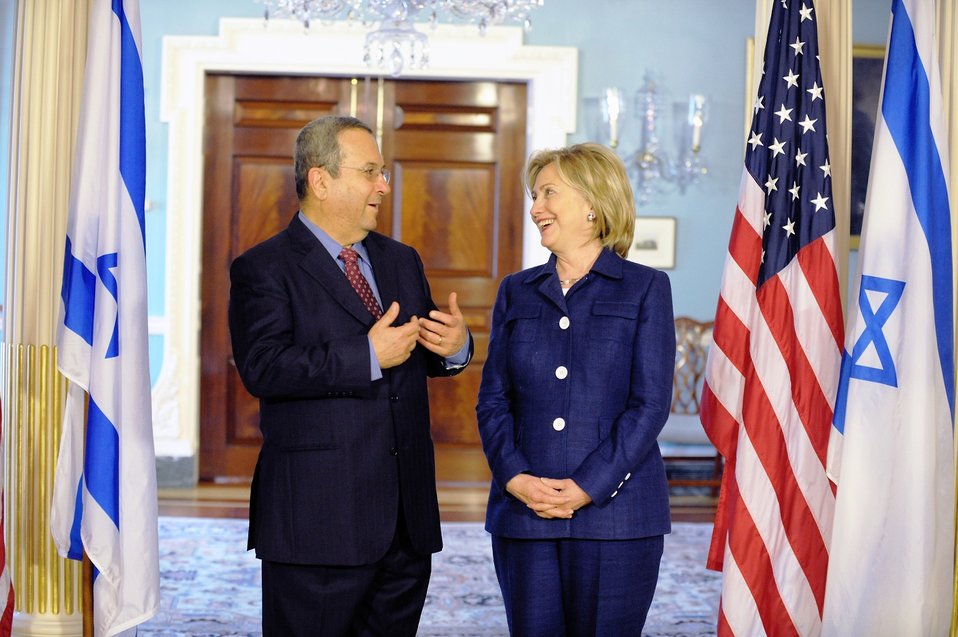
Secretary Clinton Holds Bilateral Meeting With Israeli Defense Minister Barak

U.S. Secretary of State Hillary Rodham Clinton holds a bilateral meeting with Israeli Defense Minister Ehud Barak at the U.S. Department of State in Washington, D.C., on June 23, 2010.